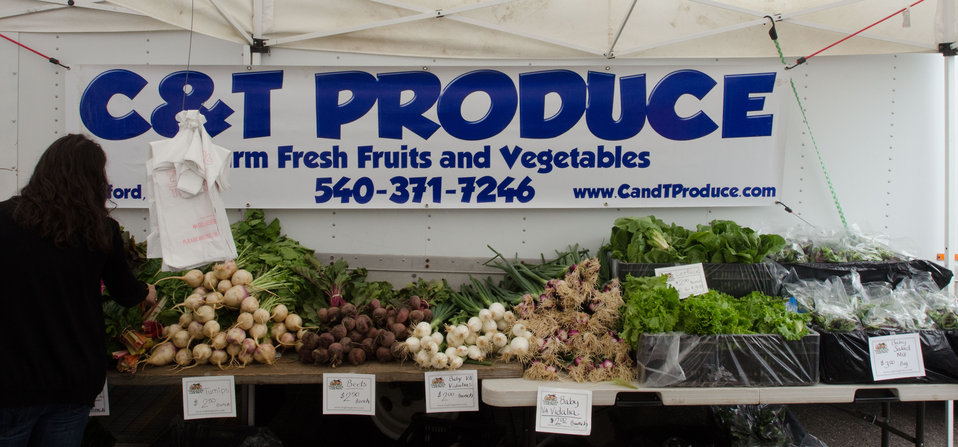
Fresh vegetables from C & T Produce at the U.S. Department of Agriculture (USDA) summer farmers market opening of the 17th season at the USDA Whitten Building east parking lot in Washington, D.C., on Friday, May 31, 2012. This year's theme is Grow, Healthy, Eat Healthy & Be Healthy. USDA and Fuel Up to Play 60, in partnership with the National Dairy Council and the National Football League, invited residence, visitors and local school children to participate in opening day activities. Hip Hop Public Health featuring Easy A.D. from Cold Crush Brothers and disk jockey Artie Green play music and invite people to get up on stage to dance or hula hoop to get active. D.C. Truck Farm help people know from what plants, that certain herbs, fruit and produce come from by giving tail-gate tours of the garden growing in the bed of their pickup truck. The Peoples Garden Initiative and USDA Executive Master Gardeners gave away a variety of fruit and produce seedlings to include the Tomato ‘Abraham Lincoln’ in celebration of the USDA 150th Anniversary and to share their harvest. New features for 2012 include an on-site sign language interpreter, a hand washing station, and a USDA-certified organic vendor. Other products selling today are fresh fruits, vegetables, herbs, baked goods, meats, kettle popcorn, local honey, hand-made soap and more.